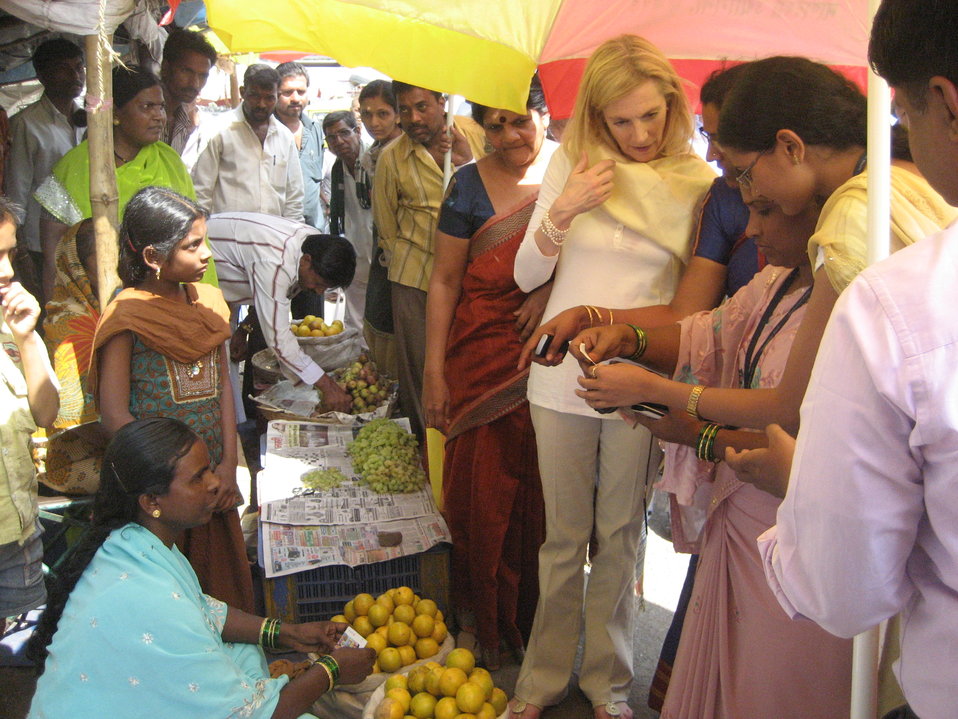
Lael Brainard's Visit to India

Under Secretary Brainard visited a local vegetable market and learned about Mann Deshi's E-card program, which allows women to make secure deposits through a bank agent who travels to their village with a handheld device.